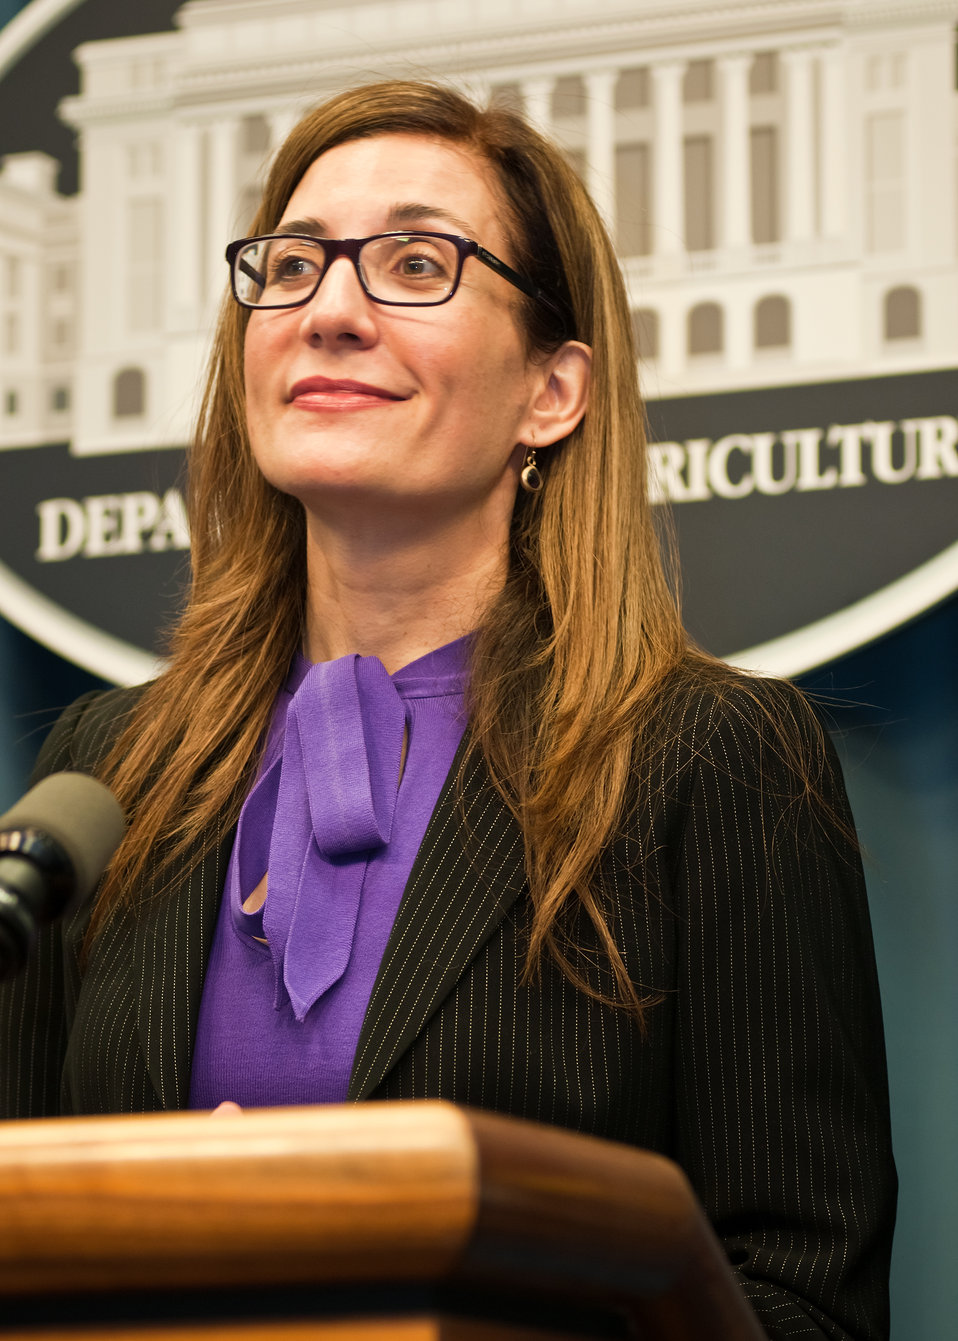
Agriculture Deputy Administrator of the Supplemental Nutrition Assistance Program (SNAP), Food and Nutrition Service (FNS) Lisa Pino was the keynote speaker at the United States Department of Agriculture (USDA) Hispanic Association of Colleges and University (HACU) summer interns during the USDA/HACU/Tribal College summer intern orientation at USDA in Washington, DC, Monday, Jun. 6, 2011. Ms. Pino is a past member of the a government wide HACU intern program and gave the students and graduates advice on her experience and guidance on how to make their experience as valuable as hers. The HACU/Tribal College National Internship Program represents more than 400 colleges and universities committed to higher education in the U.S., Puerto Rico, Latin America, Spain and Portugal and places student interns each year with federal agencies in Washington, DC or in field offices around the country.